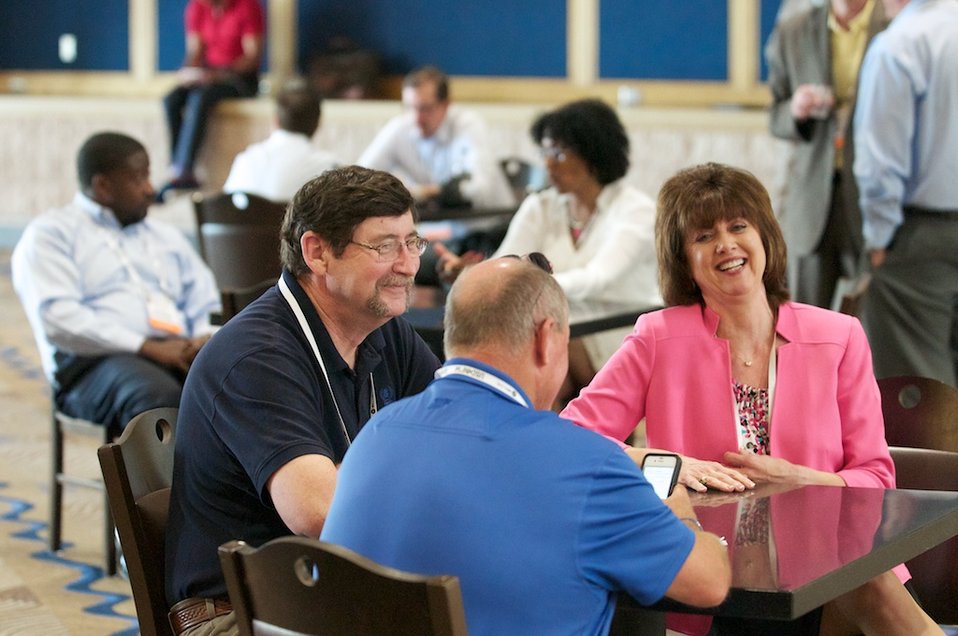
OSDBU Conf 10